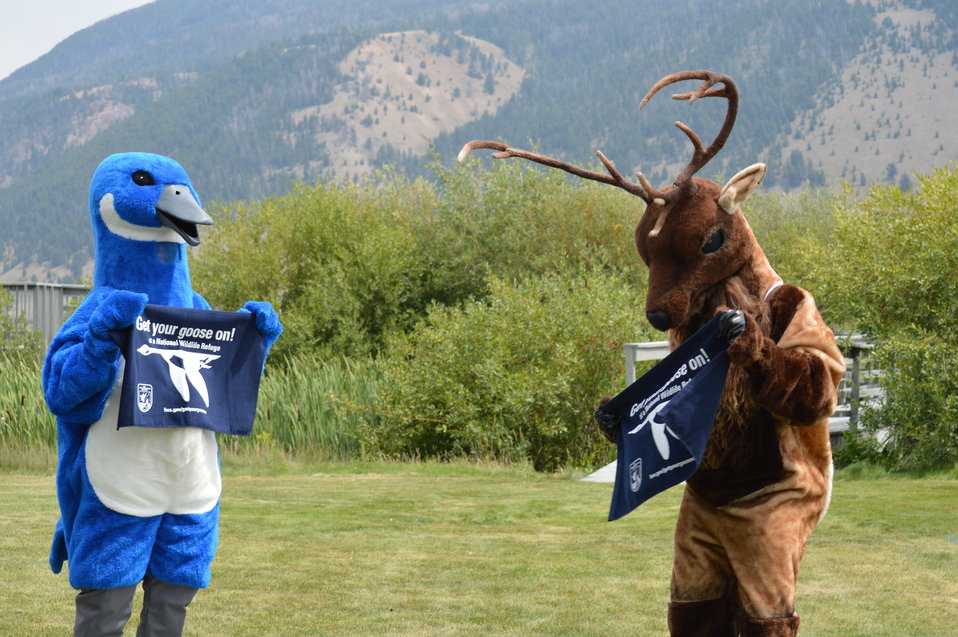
Get Your Goose On! - National Elk Refuge Style

On August 10, 2012 the U.S. Fish and Wildlife Service and Partners celebrated the 100 year anniversary of the establishment of the National Elk Refuge. In these photos, young attendees, along with Puddles the Blue Goose and the National Elk Refuge's mascot, showed us how to Get Your Goose On! with style.